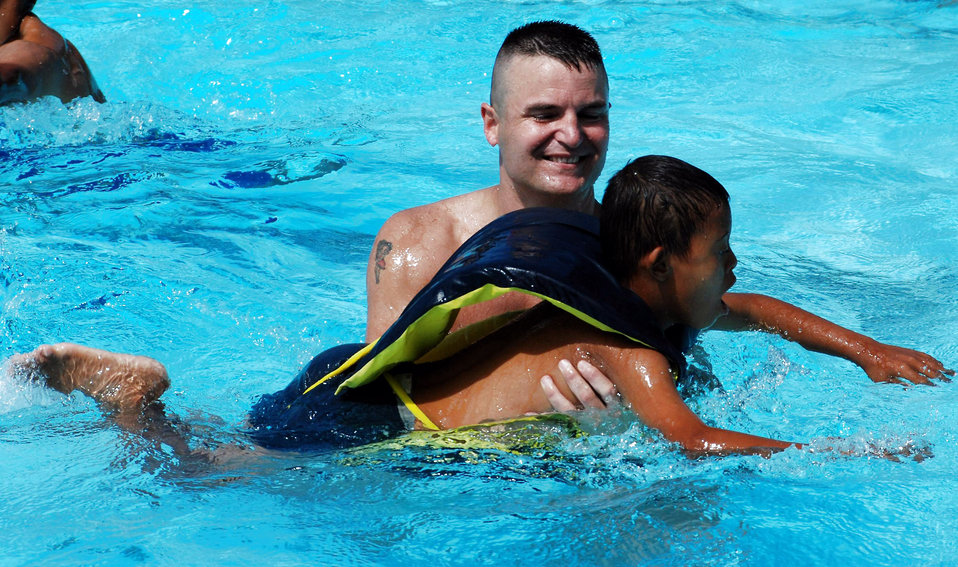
Orphanage kids have special day at Soto Cano

Capt. Dennis Spencer, a physician assistant with Joint Task Force-Bravo, plays with a child in the pool during a kids' day at Soto Cano Air Base, Honduras. More than 50 boys from the Hogar de Ninos Nazareth Orphanage in Comayagua came to the base Aug. 2 for a day of fun and activities.